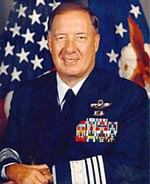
Gen. Charles Horner

Gen. Charles A. Horner, the architect of the Operation Desert Storm air campaign against Iraq.